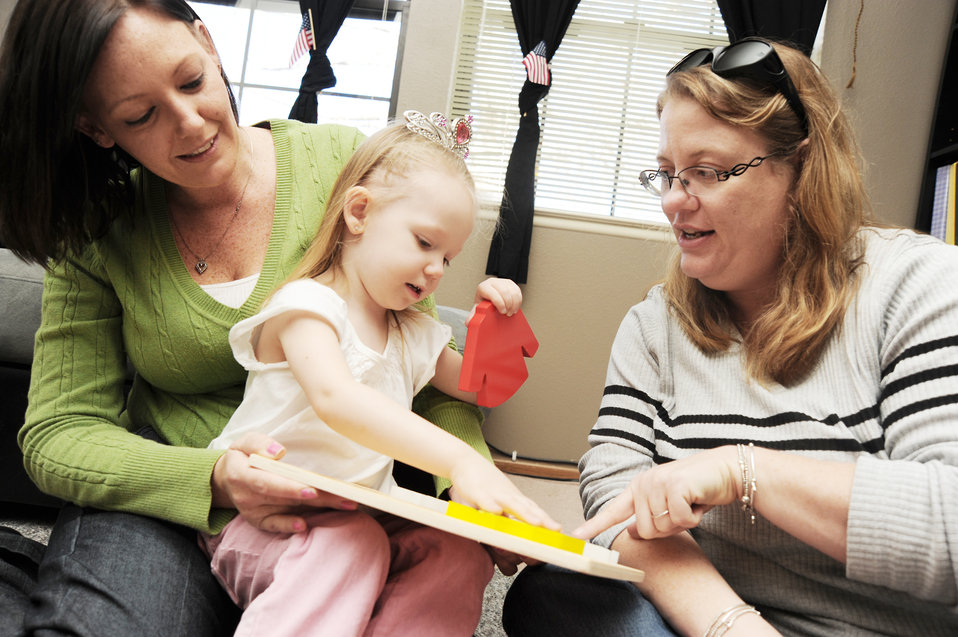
McConnell 'Heroes at Home' program helps military children

Tish Holmes holds her daughter, Savannah, while she names colors of puzzle pieces for Stephanie Shellenbarger Nov. 25, 2009, at McConnell Air Force Base, Kan. The Parents as Teachers Heroes at Home is a free program designed to help parents enhance their child's development of language and social and intellectual growth. Mrs. Holmes is a McConnell Air Force Base family member and Ms. Shellenbarger is a PAT-HAH educator.